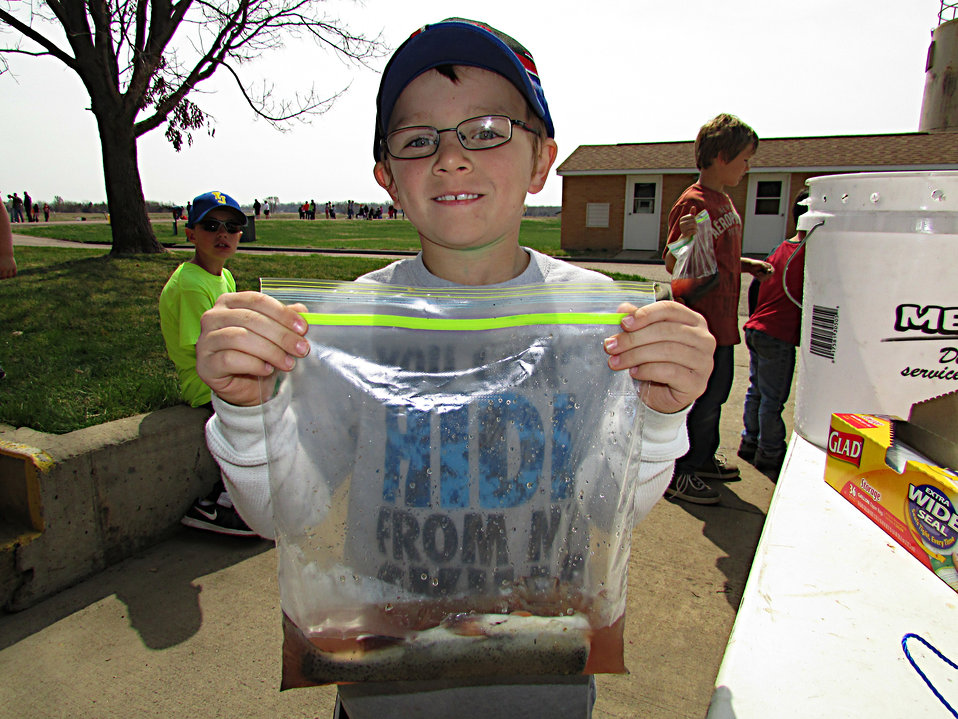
Ready for the Grill

We hope they tasted good.